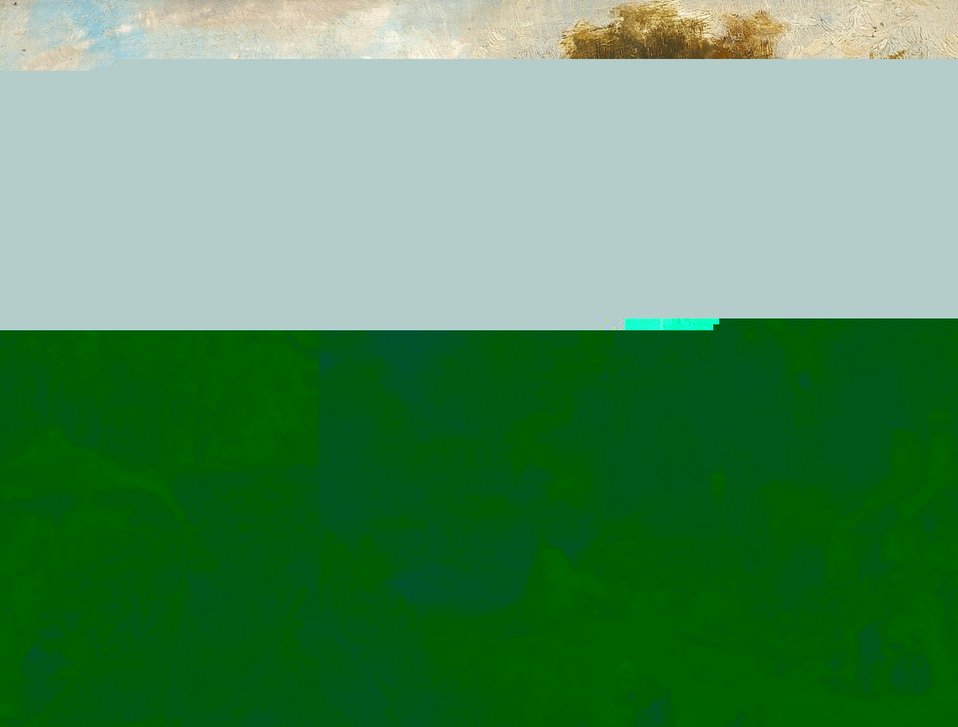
Deutsch: Fischerhäuser an einem Seeufer. Signiert und datiert unten rechts: Kappis 1890. Öl auf Holz. 19 x 26 cm.